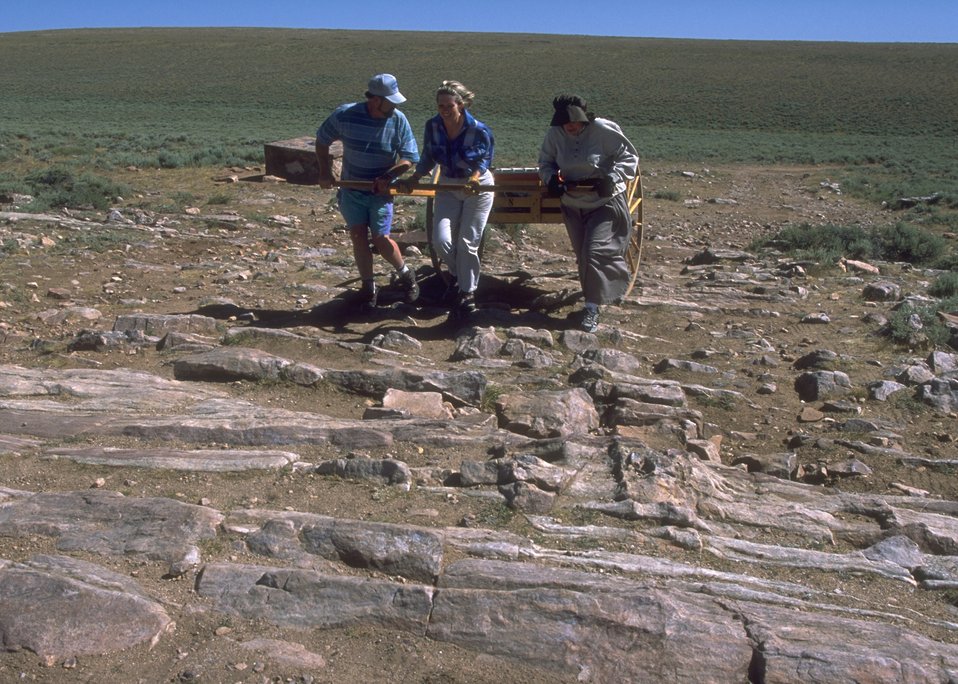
Hand cart re-enactment along the Mormon Trail, Lander Field Office.